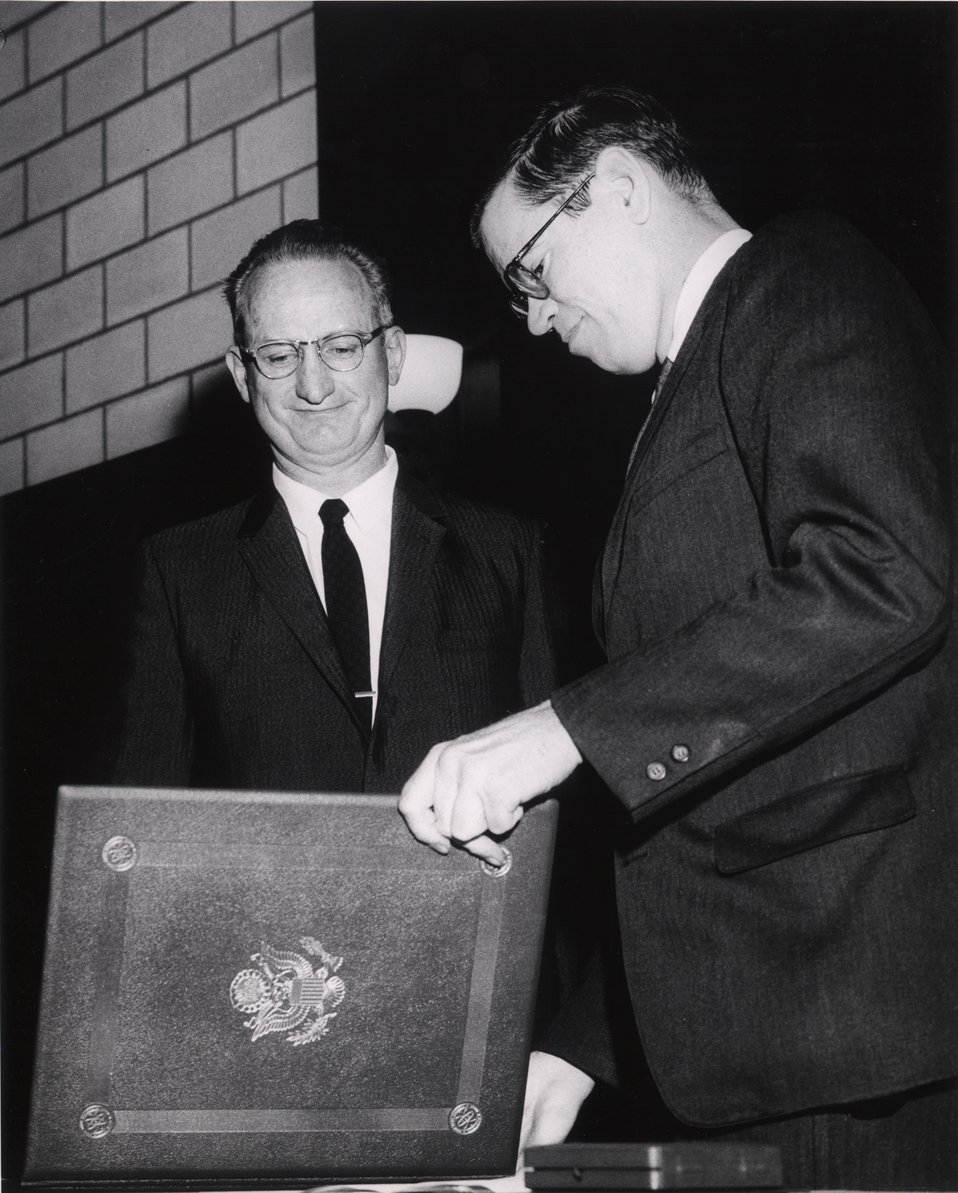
Mr. Palfrey, Dr. Rainwater. ERNEST O. LAWRENCE AWARD - 1963. National Academy of Sciences, April 25, 1963

.